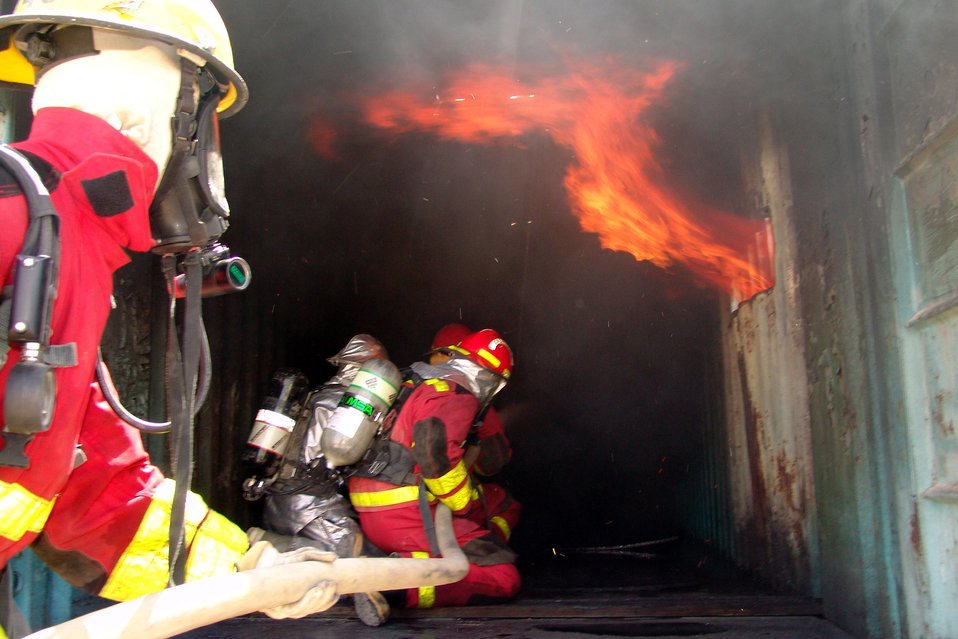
Kirkuk firefighters train Iraqis

KIRKUK AIR BASE, Iraq -- A firefighter with the 506th Expeditionary Civil Engineer Squadron leads three Iraqi firefighters into a Conex here designed for training. The Iraqis attended three days of training that culminates in putting out an actual fire.